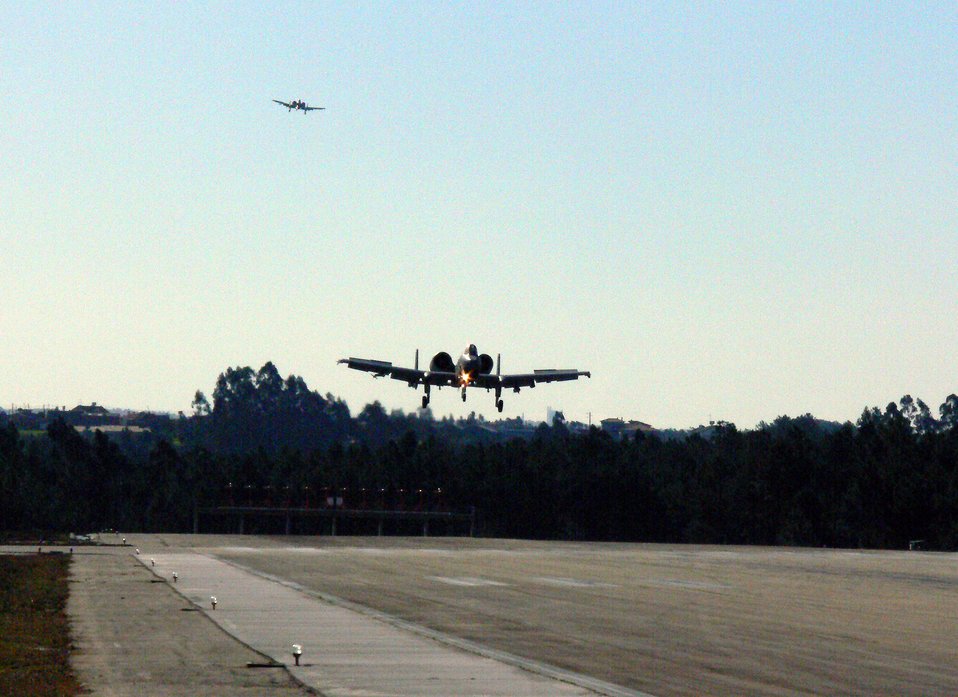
Spangdahlem Airmen, a force behind ground support

A-10 Thunderbolt IIs assigned to the 81st Fighter Squadron at Spangdahlem Air Base, Germany, come in for landing while deployed to Montreal Air Base, Portugal. Although the 81st FS Airmen returned in September from a four month deployment to Afghanistan, they continue their training, honing their skills.